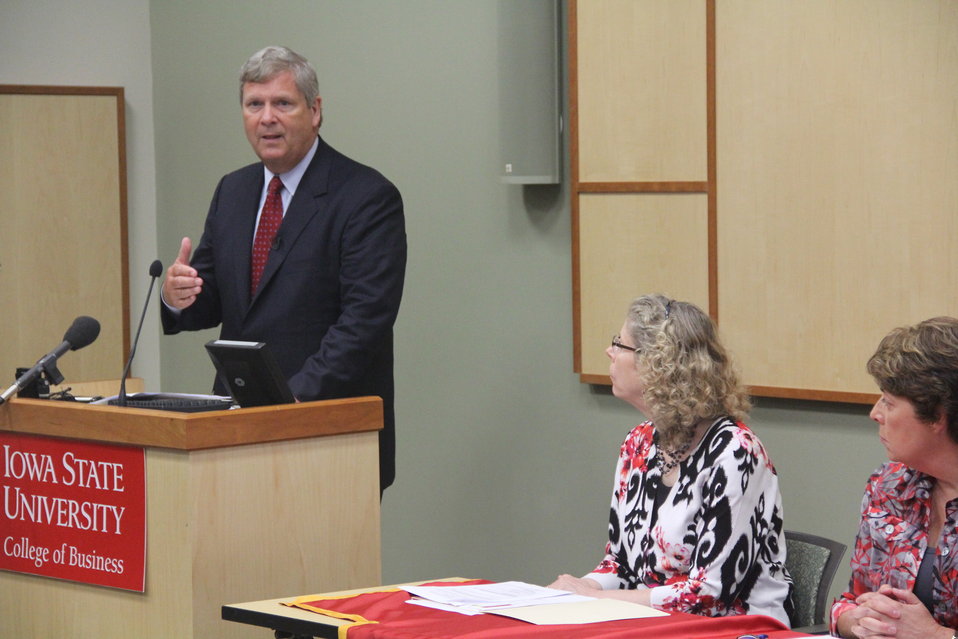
Agriculture Secretary Tom Vilsack hosts a roundtable discussion on immigration reform at Iowa State University in Des Moines, IA on Friday, Aug. 30, 2013. (L to R Agriculture Secretary Tom Vilsack, Iowa State University College of Agriculture and Life Sciences Dean Dr. Wendy Wintersteen, and DuPont Pioneer corporate counsel Helen Adams)